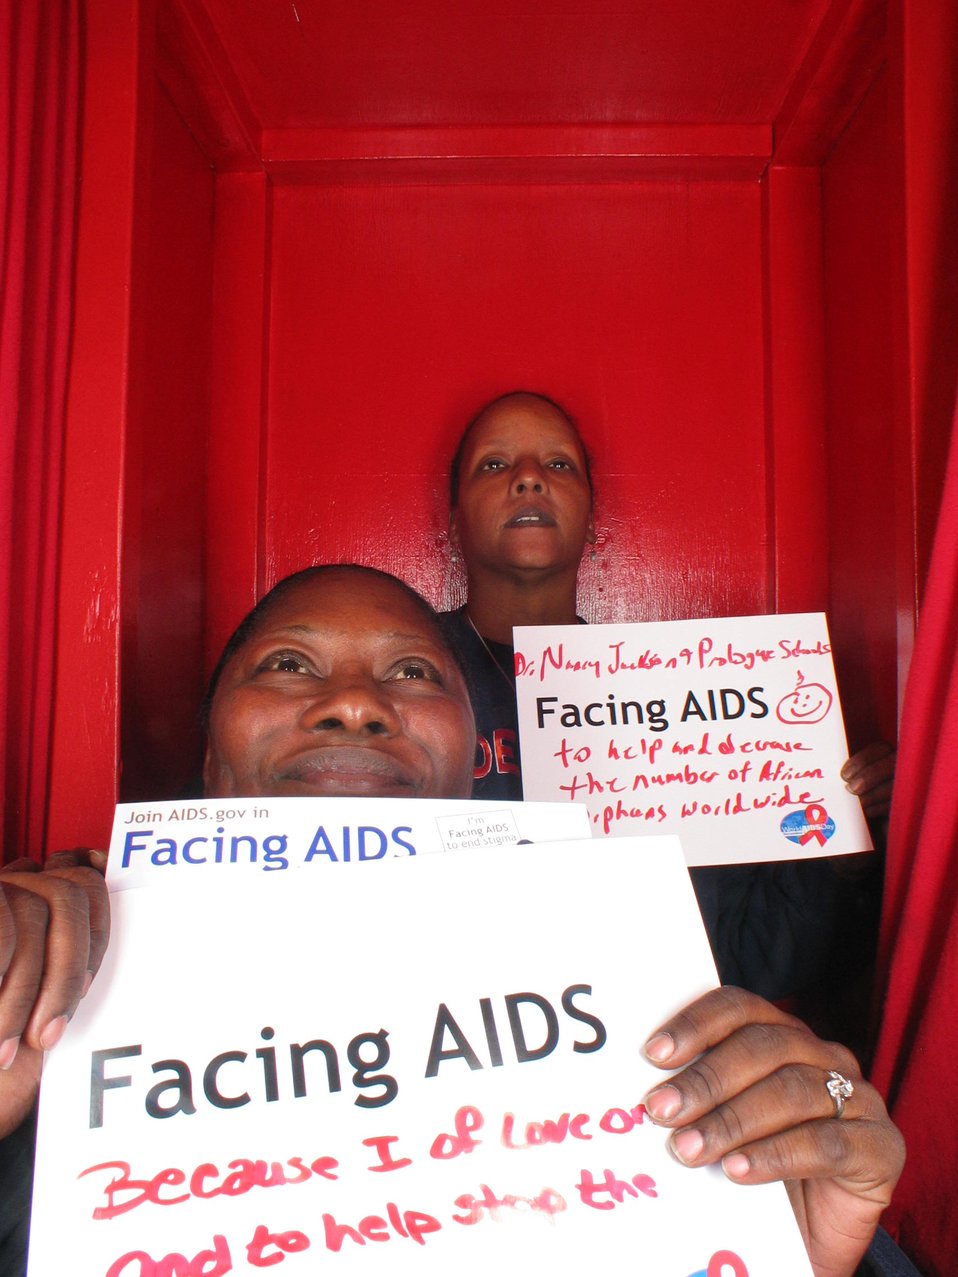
Facing AIDS